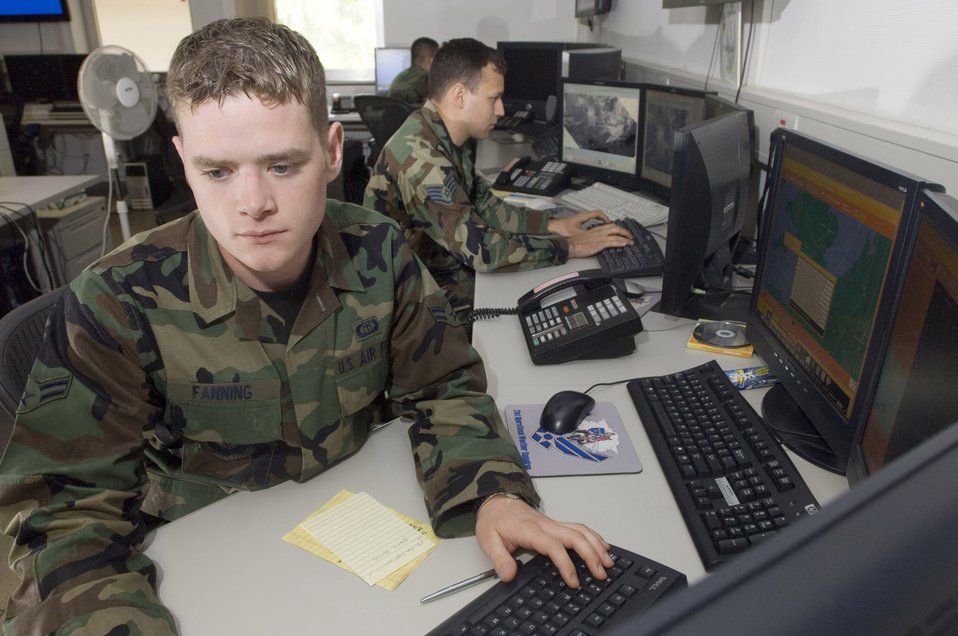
Air Force, Navy weather forecasters form one front

Airman 1st Class Andrew Fanning (left) and Staff Sgt. Heinz Disch forecast weather for the North Atlantic region from Sembach Air Base, Germany, Aug. 30. Sergeant Disch and Airman Fanning are weather forecasters with Sembach's 20th Operational Weather Squadron.